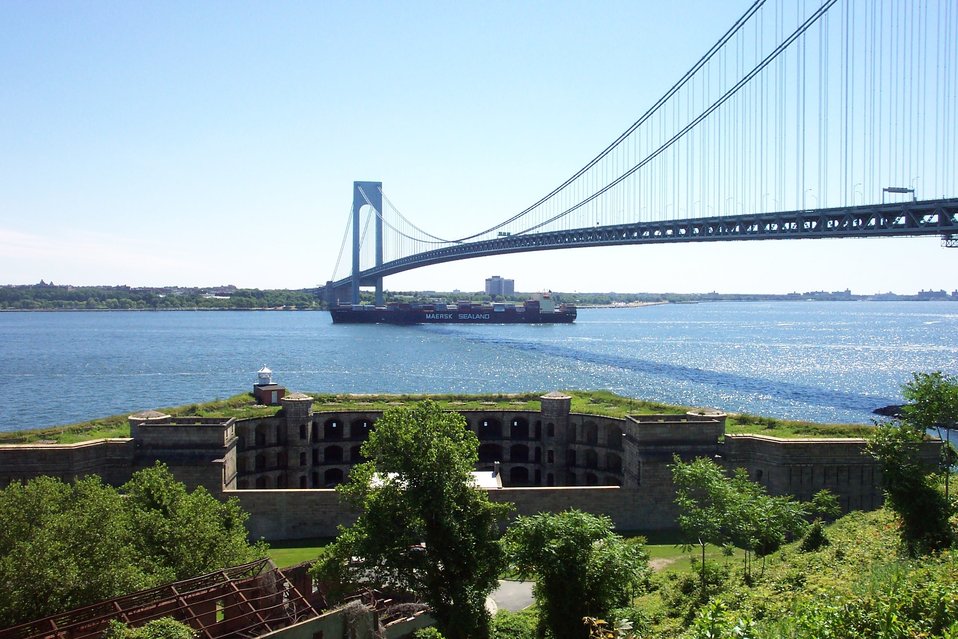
The 950-foot containership SEALAND COMMITMENT passing underneath the Verrazano Narrows Bridge.